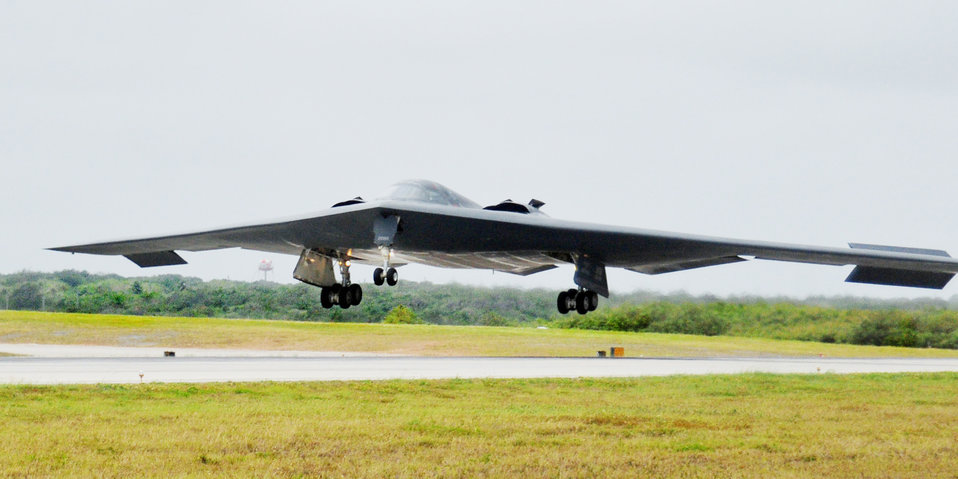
Spirit in the sky

A B-2 Spirit prepares to land March 23, 2010, at Andersen Air Force Base, Guam. The aircraft is deployed here from Whiteman Air Force Base, Mo., in support of Andersen's continuous bomber presence in the Pacific.